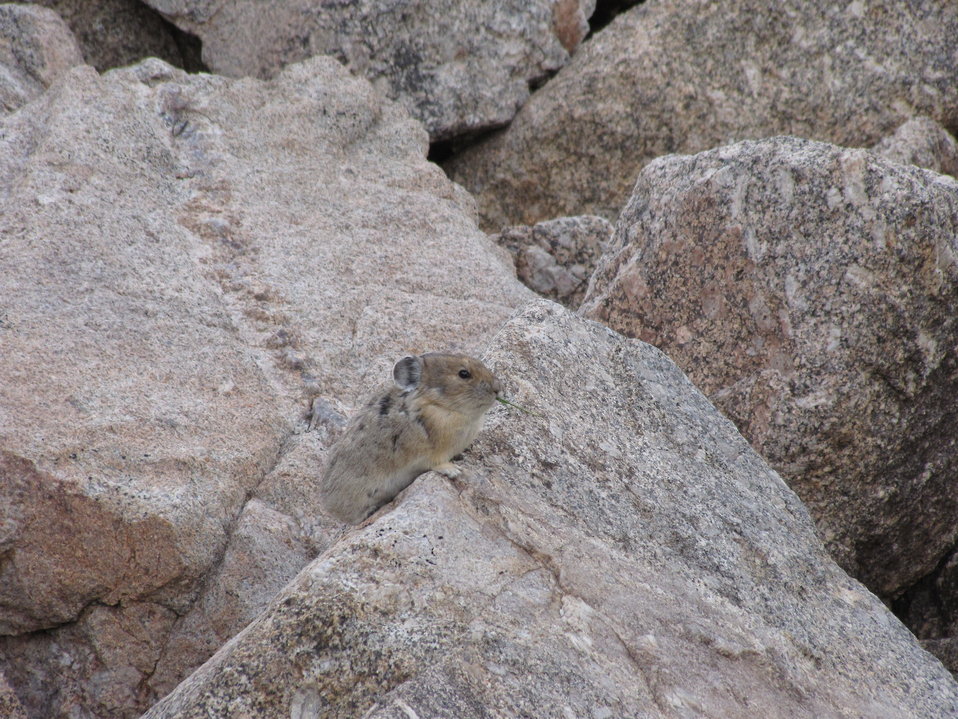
American Pika